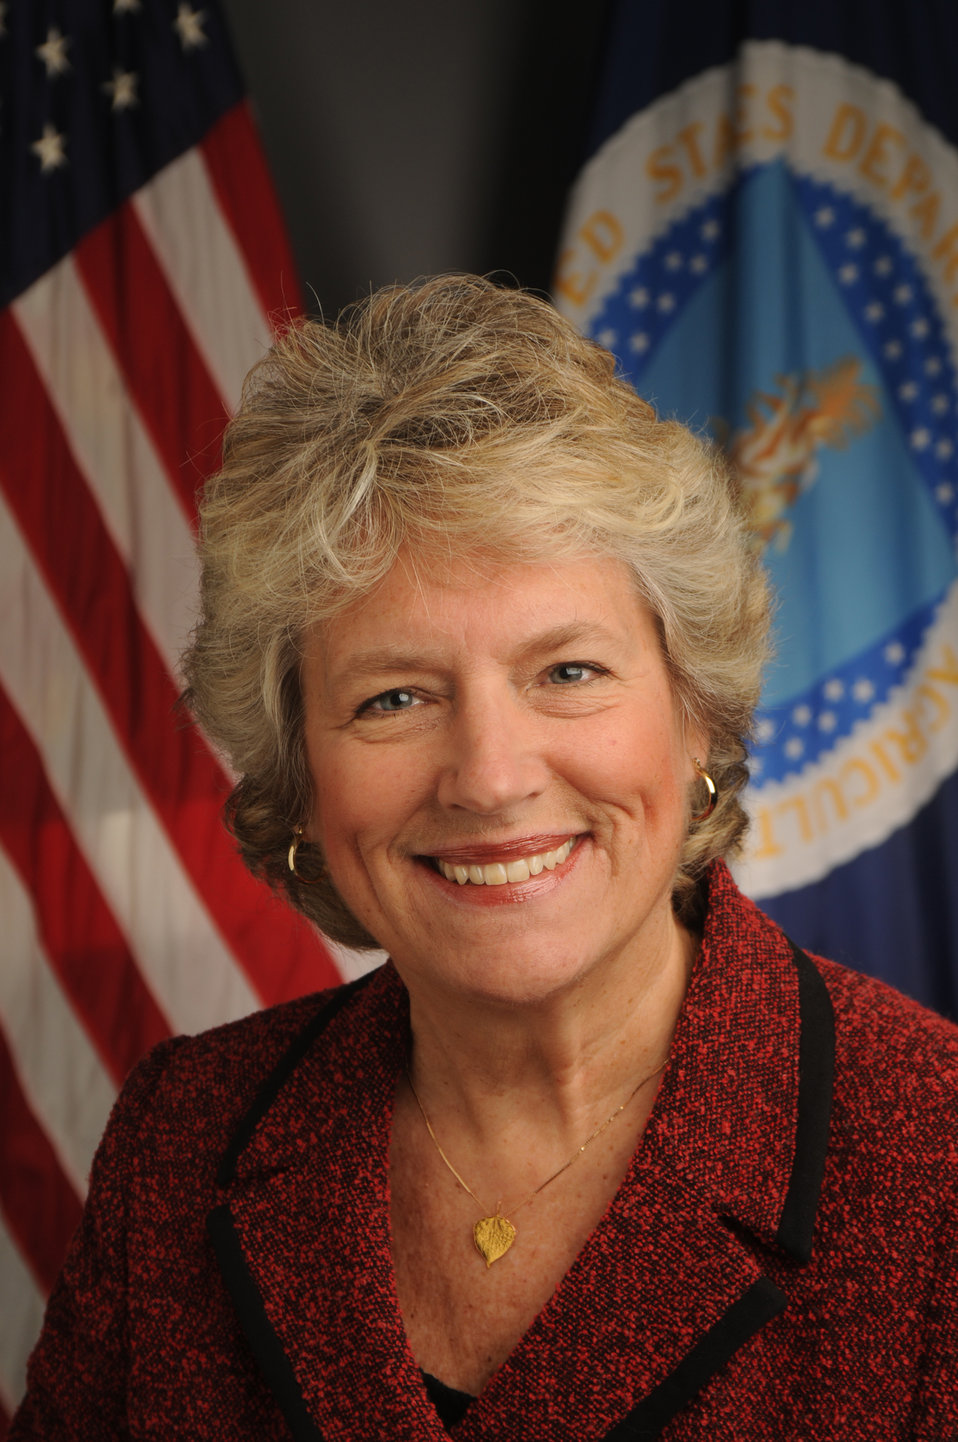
09di1077-004 Administrator Food and Nutrition Service, Jane Paradis

Administrator for the Food and Nutrition Service, Jane Paradis.